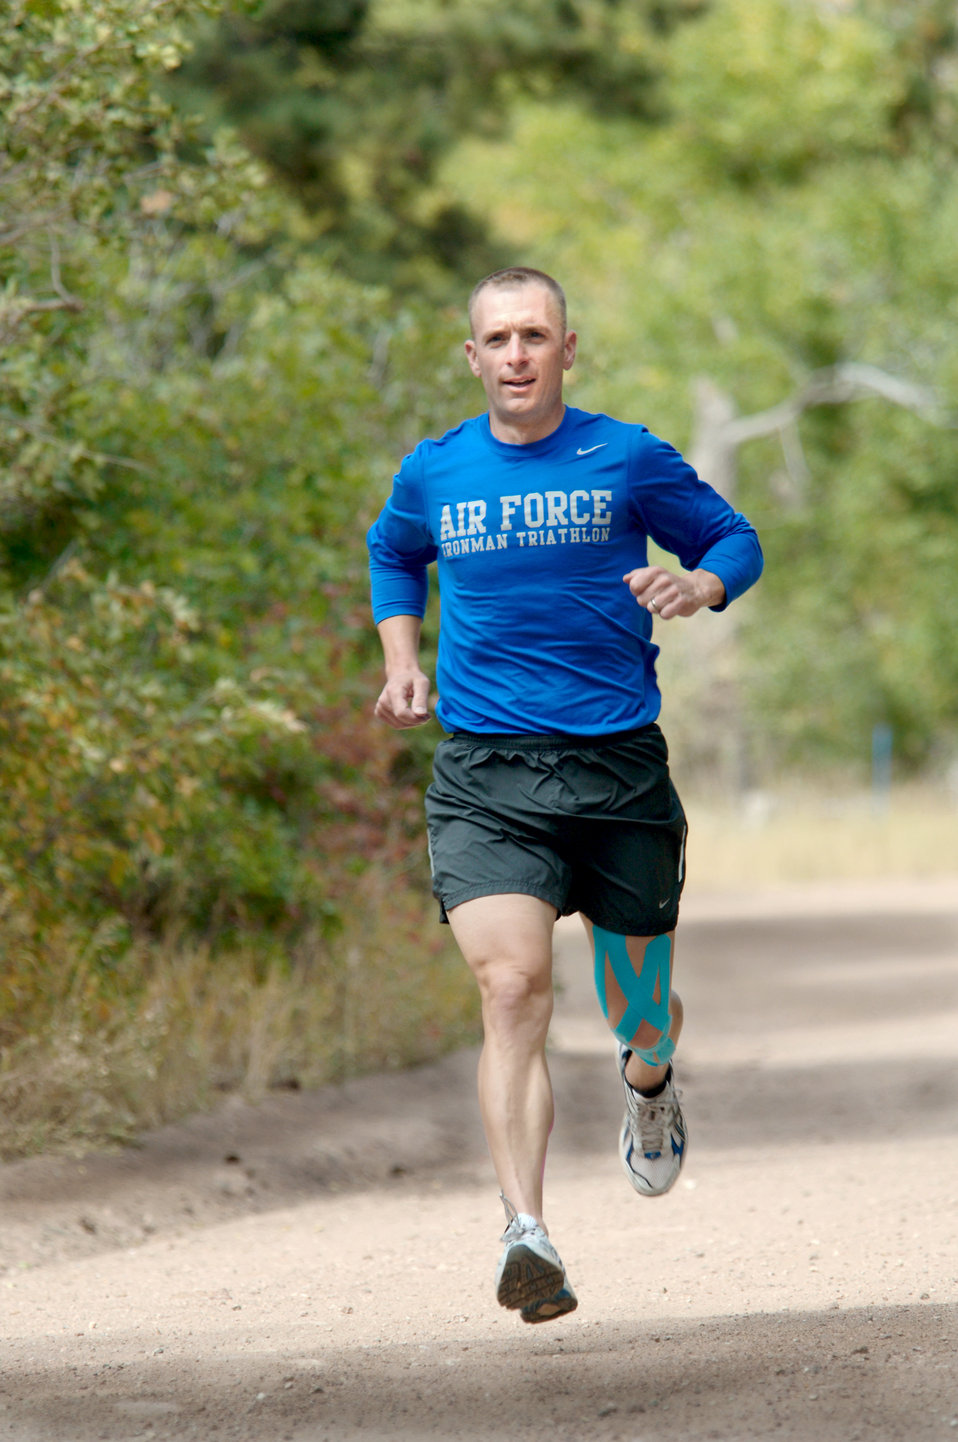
Academy officer picked for top triathlon

Maj. Scott Poteet, the adviser for Air Force Academy Cadet Squadron 02, trains for the 2010 Ironman Triathlon Oct. 4, 2010 at the Academy. Poteet's regimen includes more than three hours of training per day biking, swimming and running. The Ironman Triathlon takes place Oct. 9 in Kona, Hawaii.